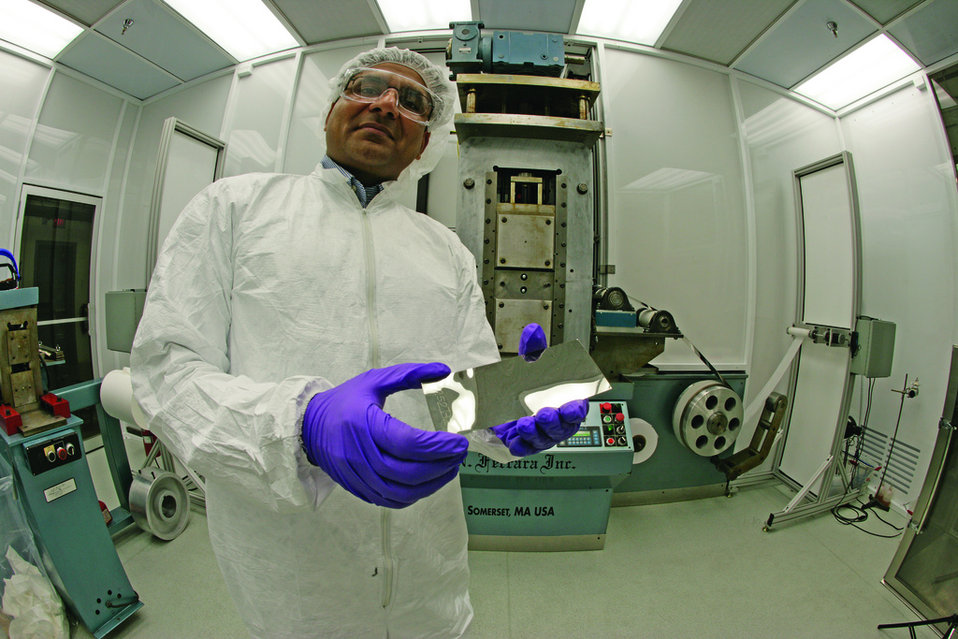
Nickel-tungsten substrates like this shown by Amit Goyal of Oak Ridge National Laboratory's Materials Science and Technology Division are rolled to make a roadbed for high-temperature superconducting wire.